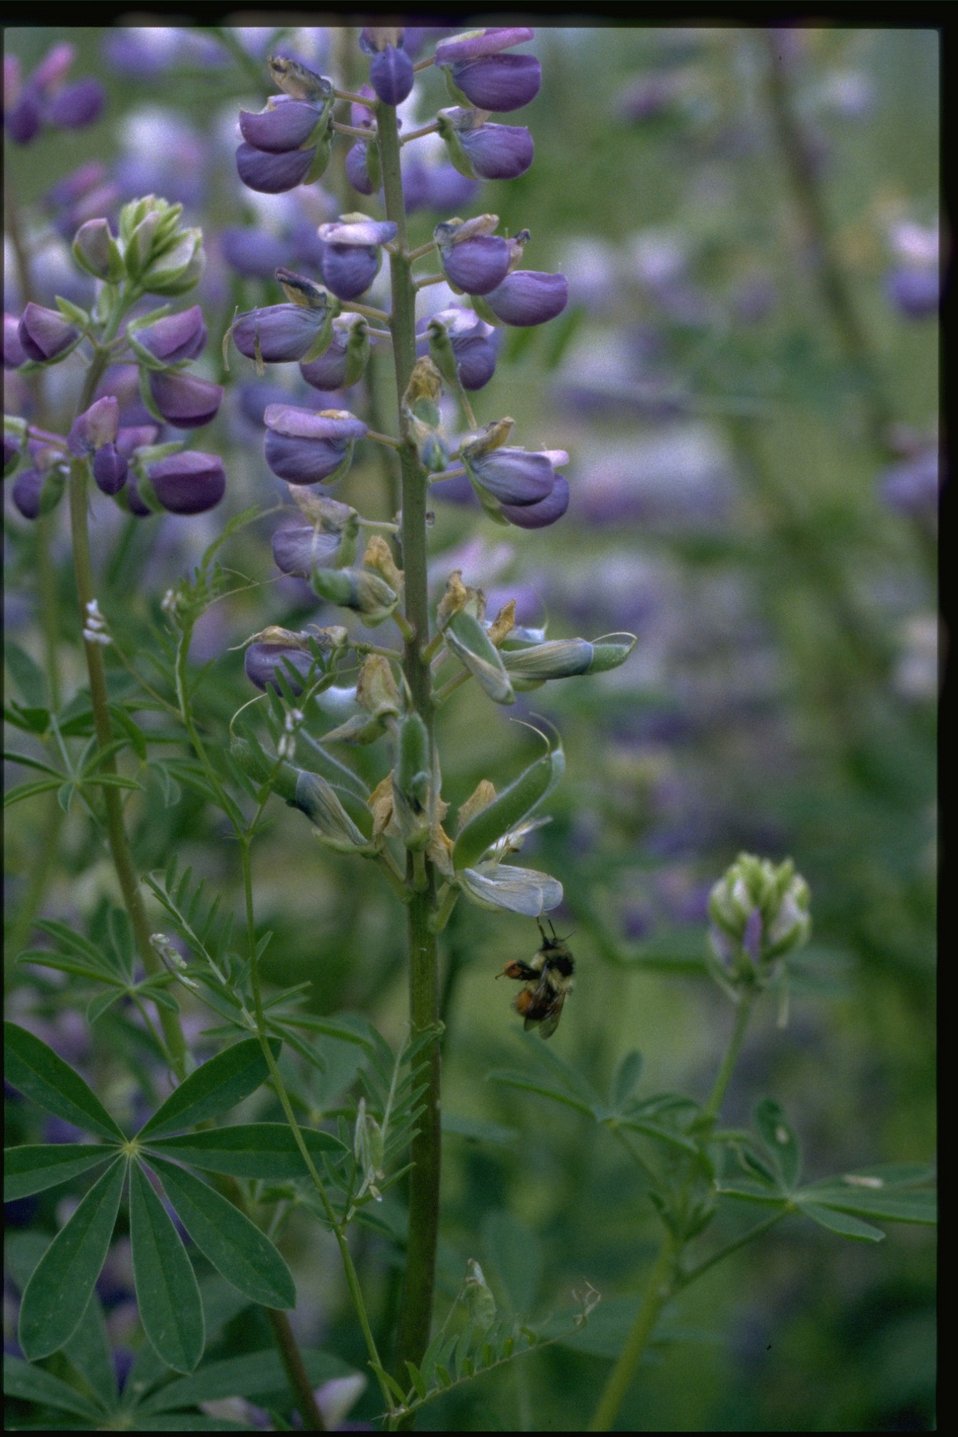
Medium shot of lupine wildflower (Lupinus arcticus).